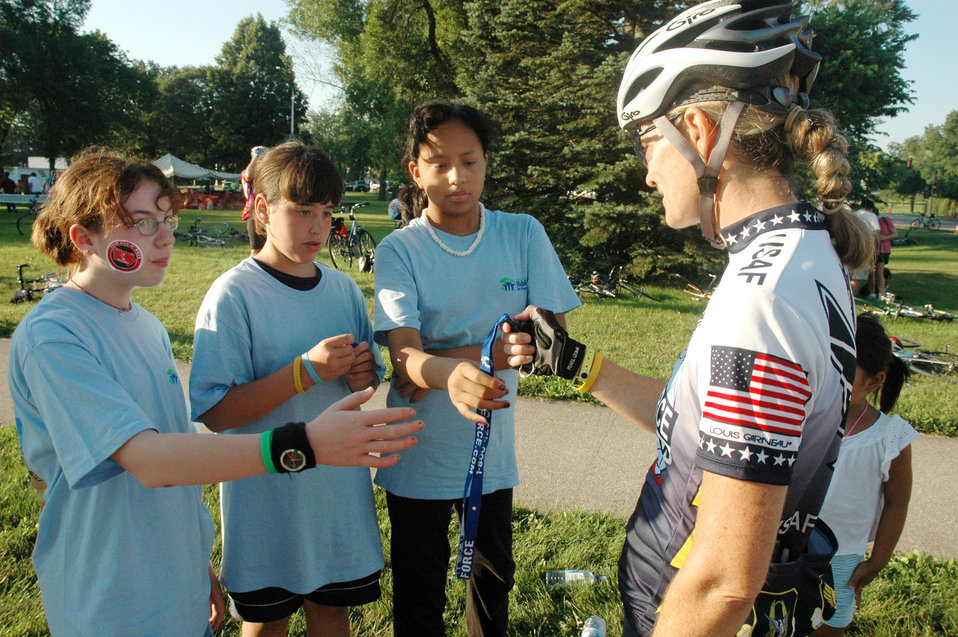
Air Force cycling team wraps up RAGBRAI

Lt. Col. Sheila Marcusen hands out Air Force promotional materials to girls in West Branch, Iowa, on July 29. The colonel was a member of the Air Force team taking part in the Des Moines Register's Annual Great Bike Ride Across Iowa. The Air Force team of cyclists participates in RAGBRAI in support of recruiting. Colonel Marcusen is with the U.S. Transportation Command at Scott Air Force Base, Ill.